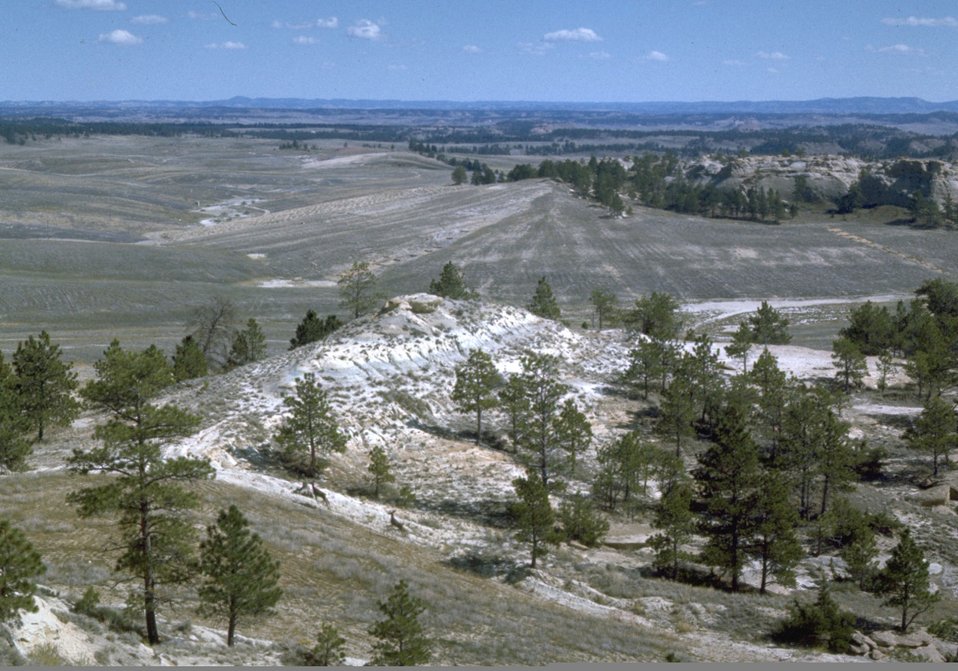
Colstrip/mining operation